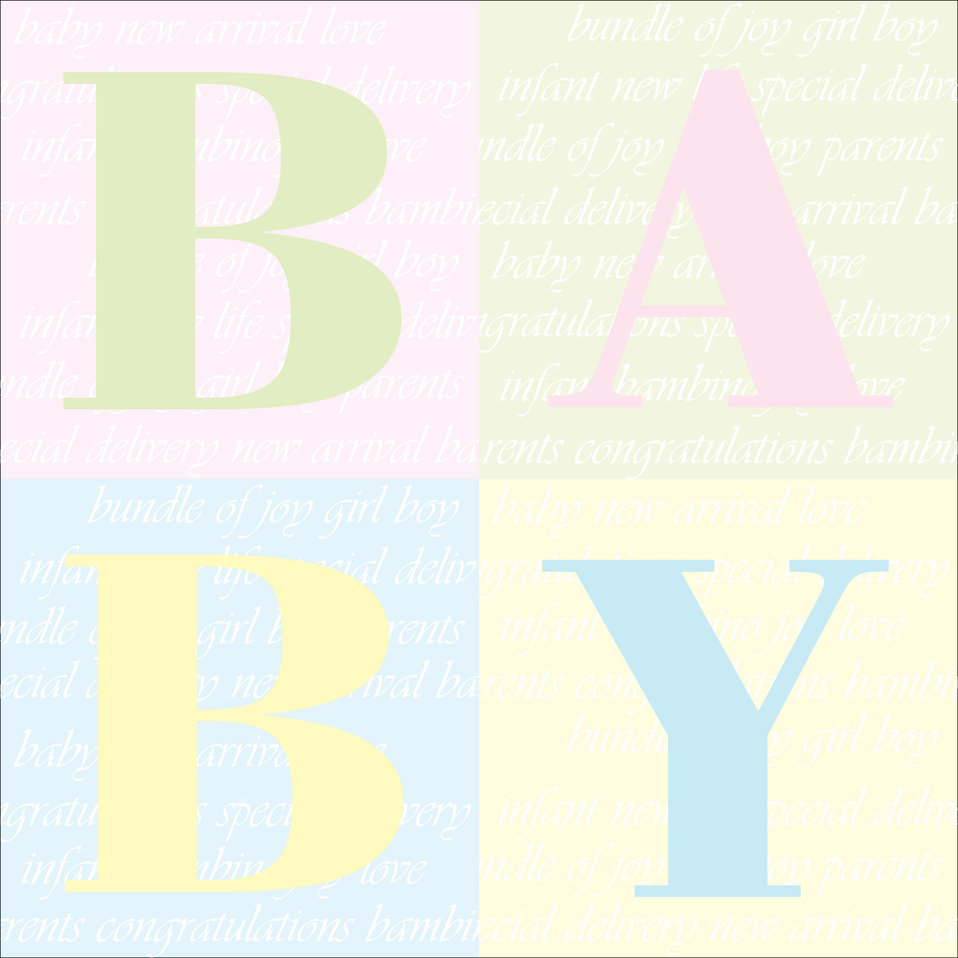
Baby background text

Background card template for a baby text words cute.